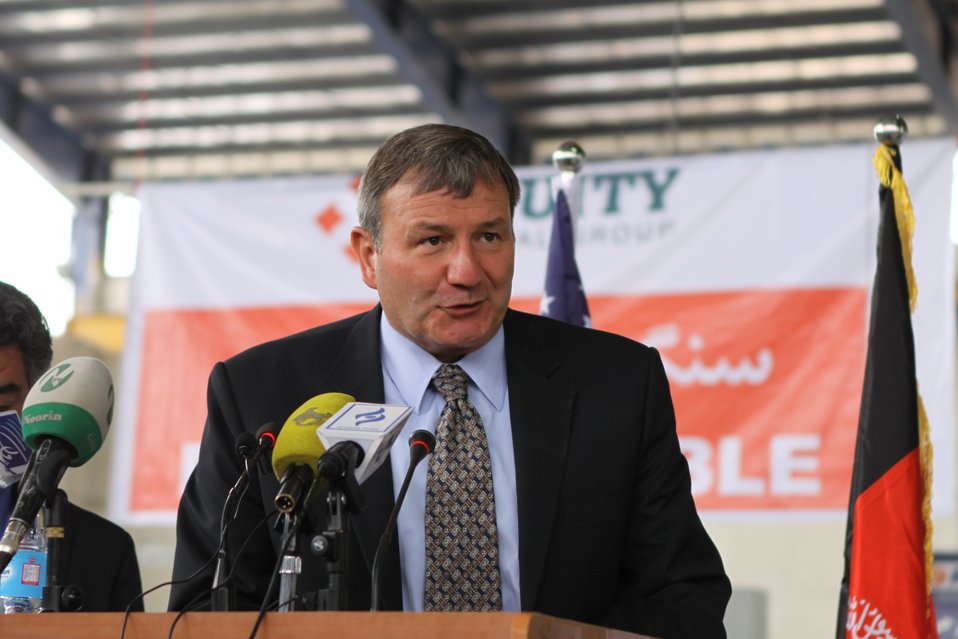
100525 Hirat Marble Conference 200